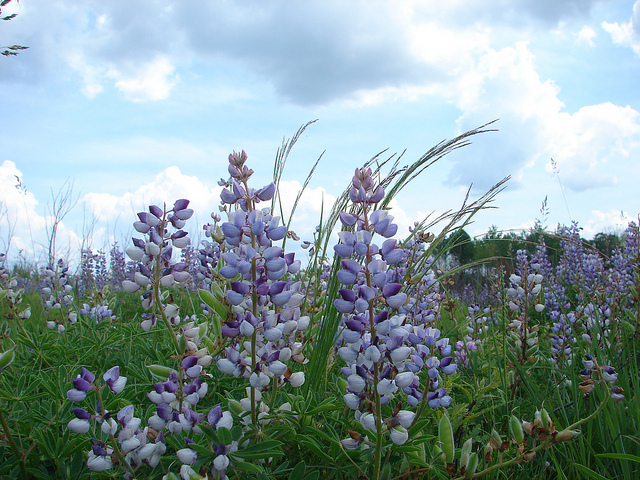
Necedah National Wildlife Refuge, WI

Native lupine in bloom